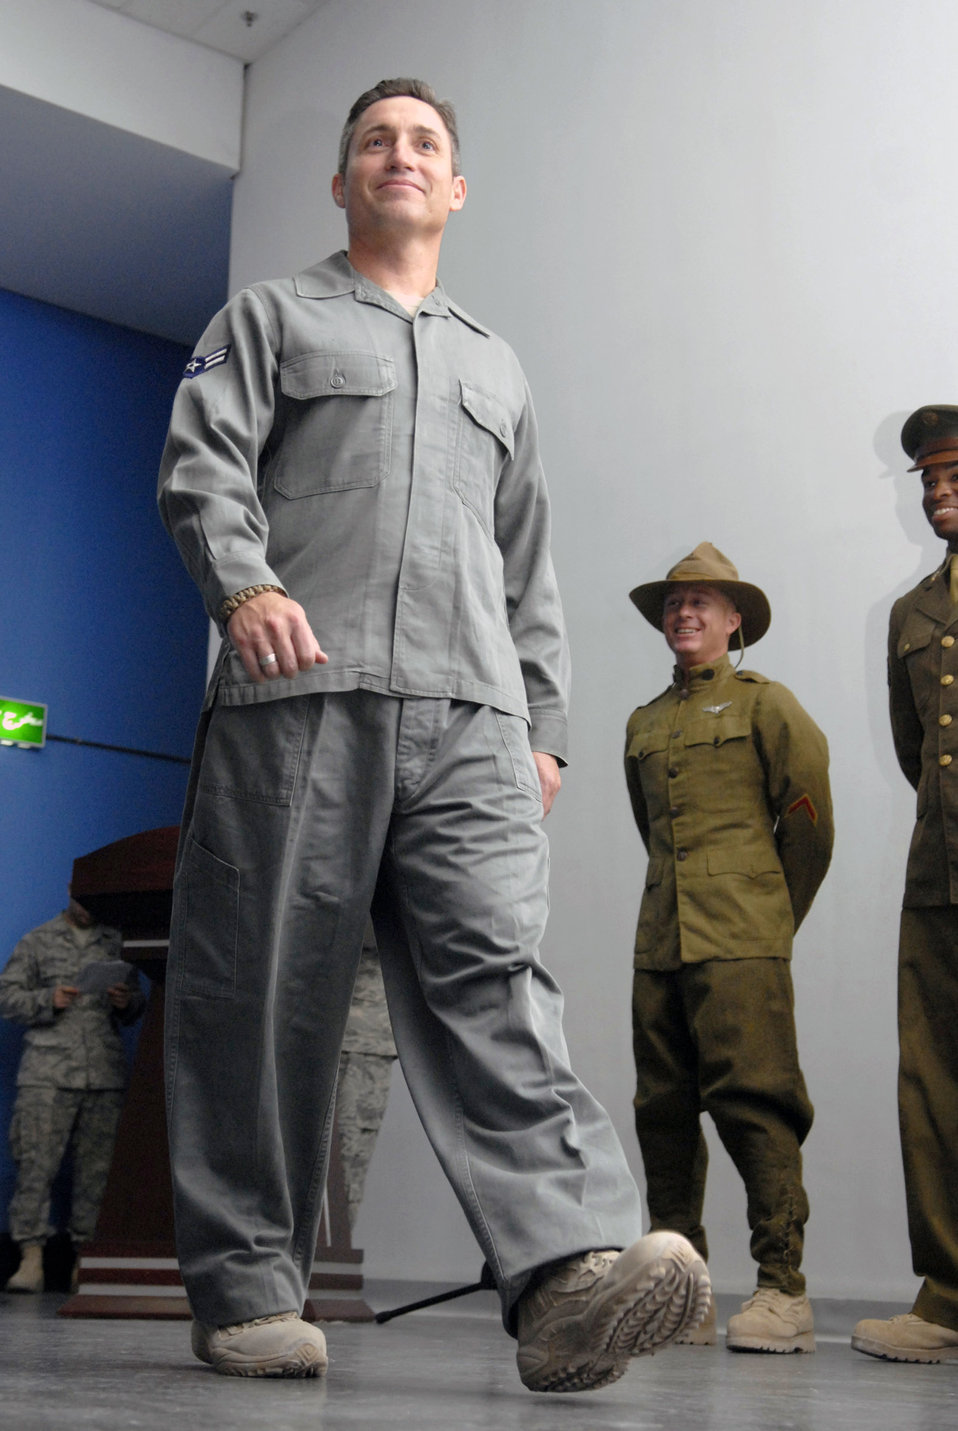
Operation Uniform Delta highlights heritage

Capt. Rich Shoaf walks down the runway wearing the Air Force's first official fatigue uniform during Operation Uniform Delta April 27 at a base in Southwest Asia. Operation Uniform Delta was an event displaying the history of the Air Force uniforms and their transformations throughout the years. Captain Shoaf is assigned to the 379th Expeditionary Communications Squadron.